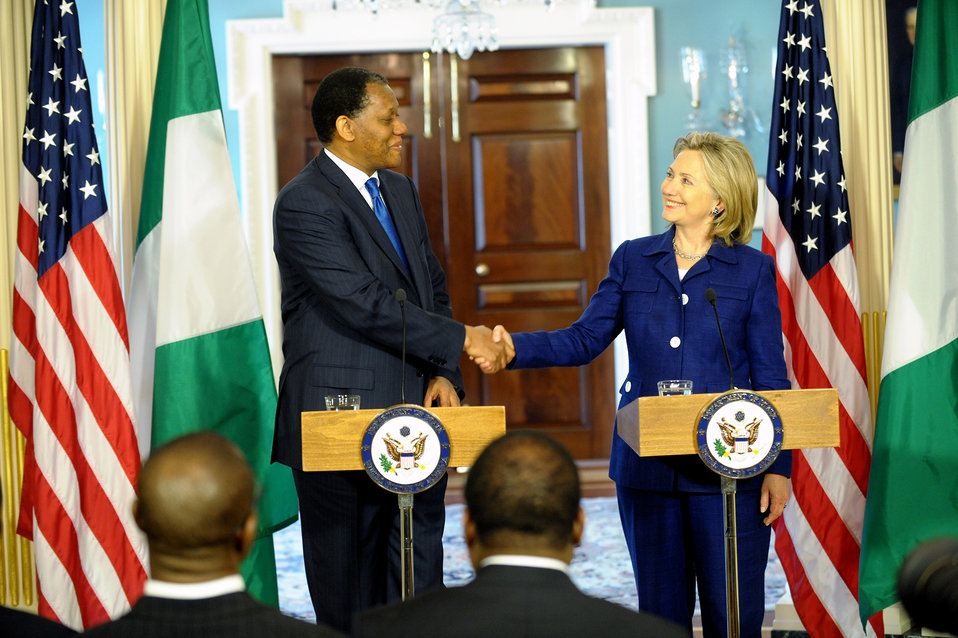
Secretary Clinton Shakes Hands With Nigerian Foreign Minister Ajumogobia

U.S. Secretary of State Hillary Rodham Clinton shakes hands with Nigerian Foreign Minister Henry Odein Ajumogobia following their bilateral meeting and joint press availability at the U.S. Department of State in Washington, D.C., on August 5, 2010.